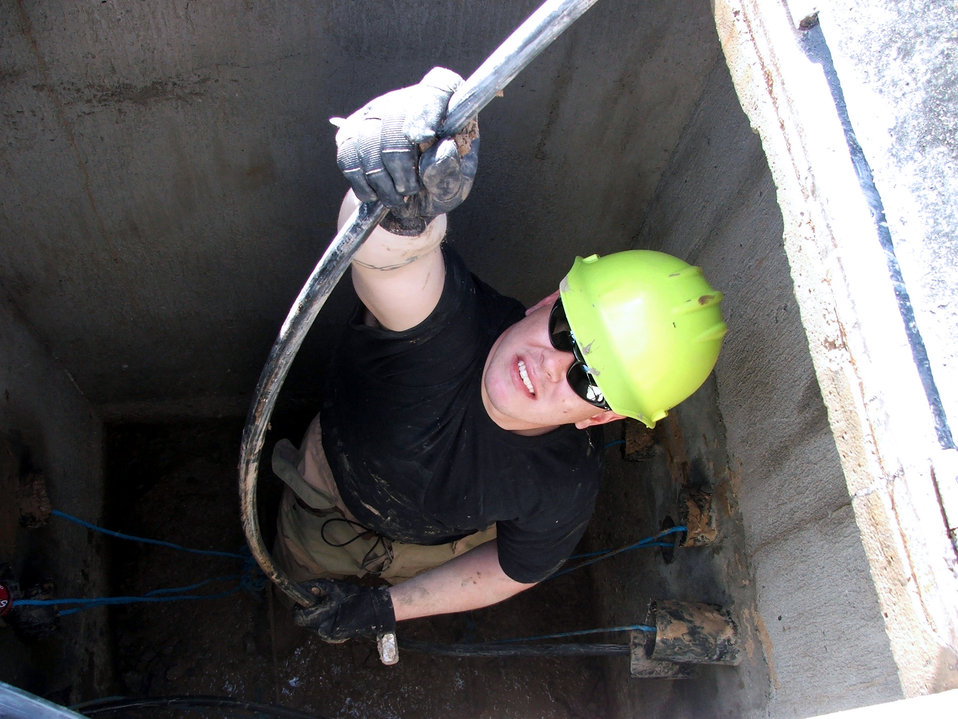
20th century connectivity

KARSHI-KHANABAD AIR BASE, Uzbekistan -- Staff Sgt. Nigel Steakley feeds cable through an underground tube during installation of a local area network here March 16. He is assigned to the 416th Expeditionary Mission Support Squadron's communications flight and is deployed from Ramstein Air Base, Germany.